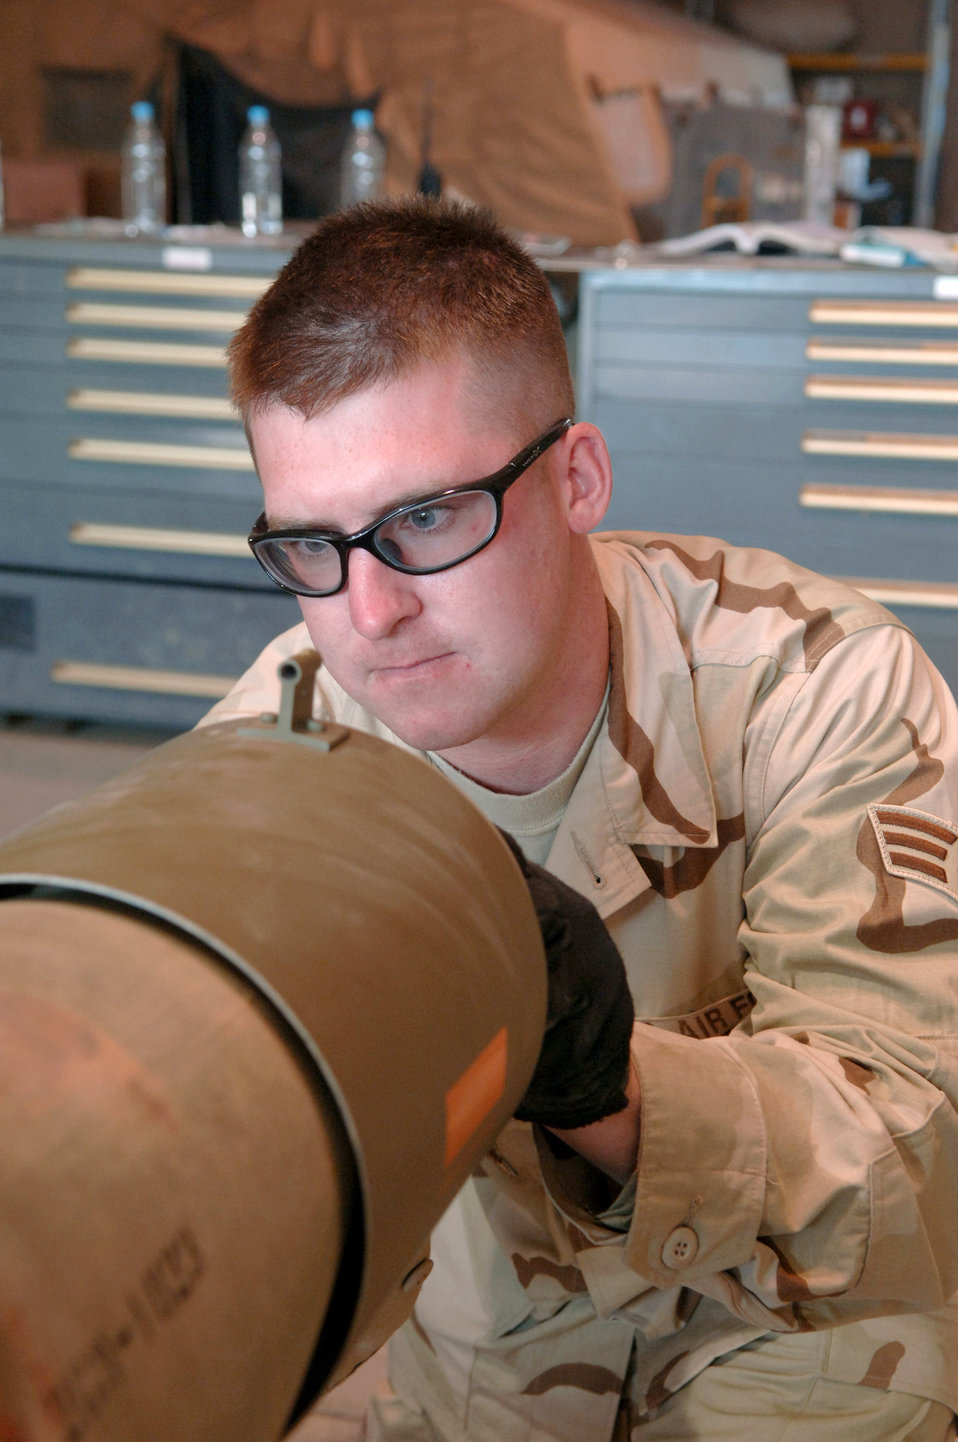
Putting steel on target

Senior Airman Jason Williamson checks the connections of a missile Nov. 29 at Balad Air Base, Iraq. Airman Williamson is assigned to the 332nd Expeditionary Maintenance Squadron Ammunition Flight and deployed out of Sioux Falls, S.D.